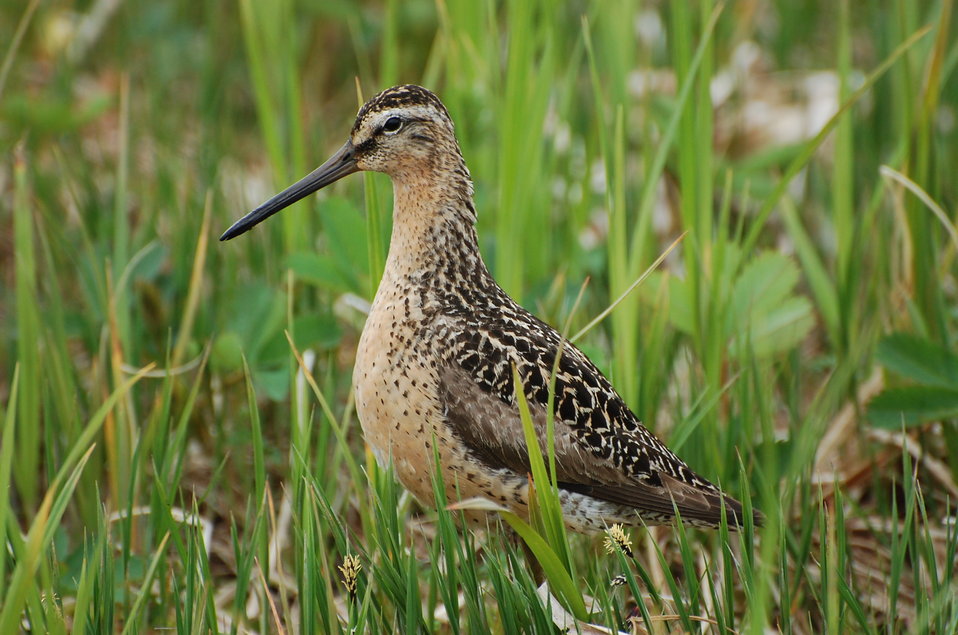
Short-billed Dowitcher

Izembek National Wildlife Refuge
Photo by Kristine Sowl,
USFWS, Public Domain